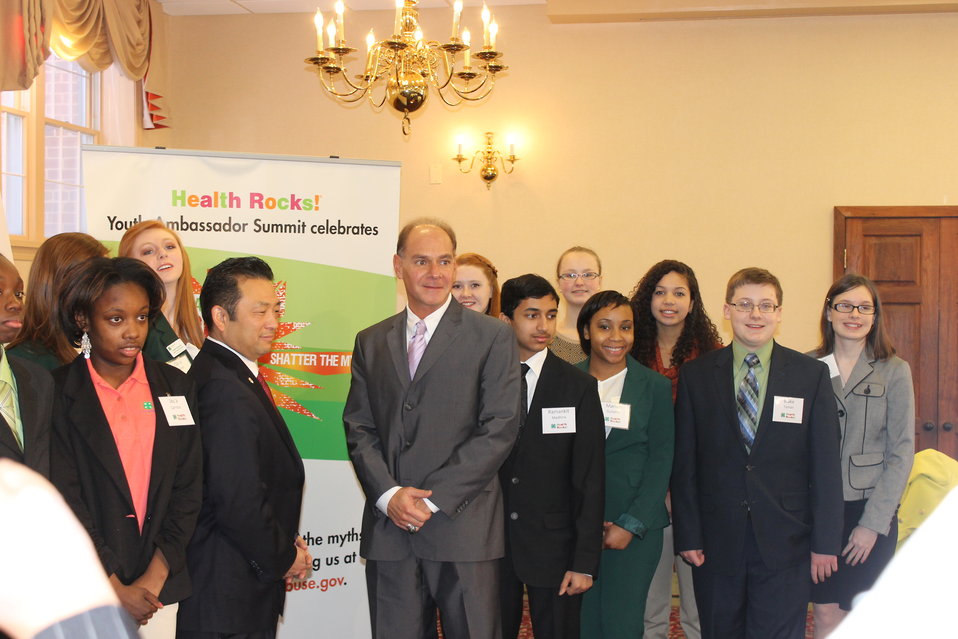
4-H Event

National 4-H Council Hosts Youth Summit to Celebrate National Drug Facts Week